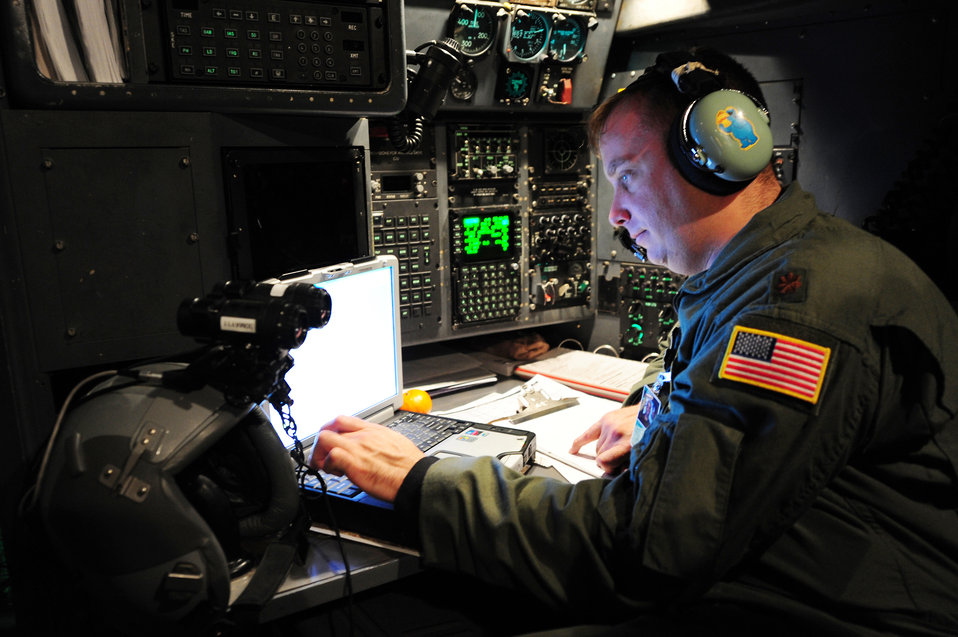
Maj. Matthew Campbell monitors the flight path of a C-130H Hercules during a Joint Operational Access Exercise Feb. 14, 2011, at Pope Air Force Base, N.C. Major Campbell is a 50th Airlift Squadron navigator.